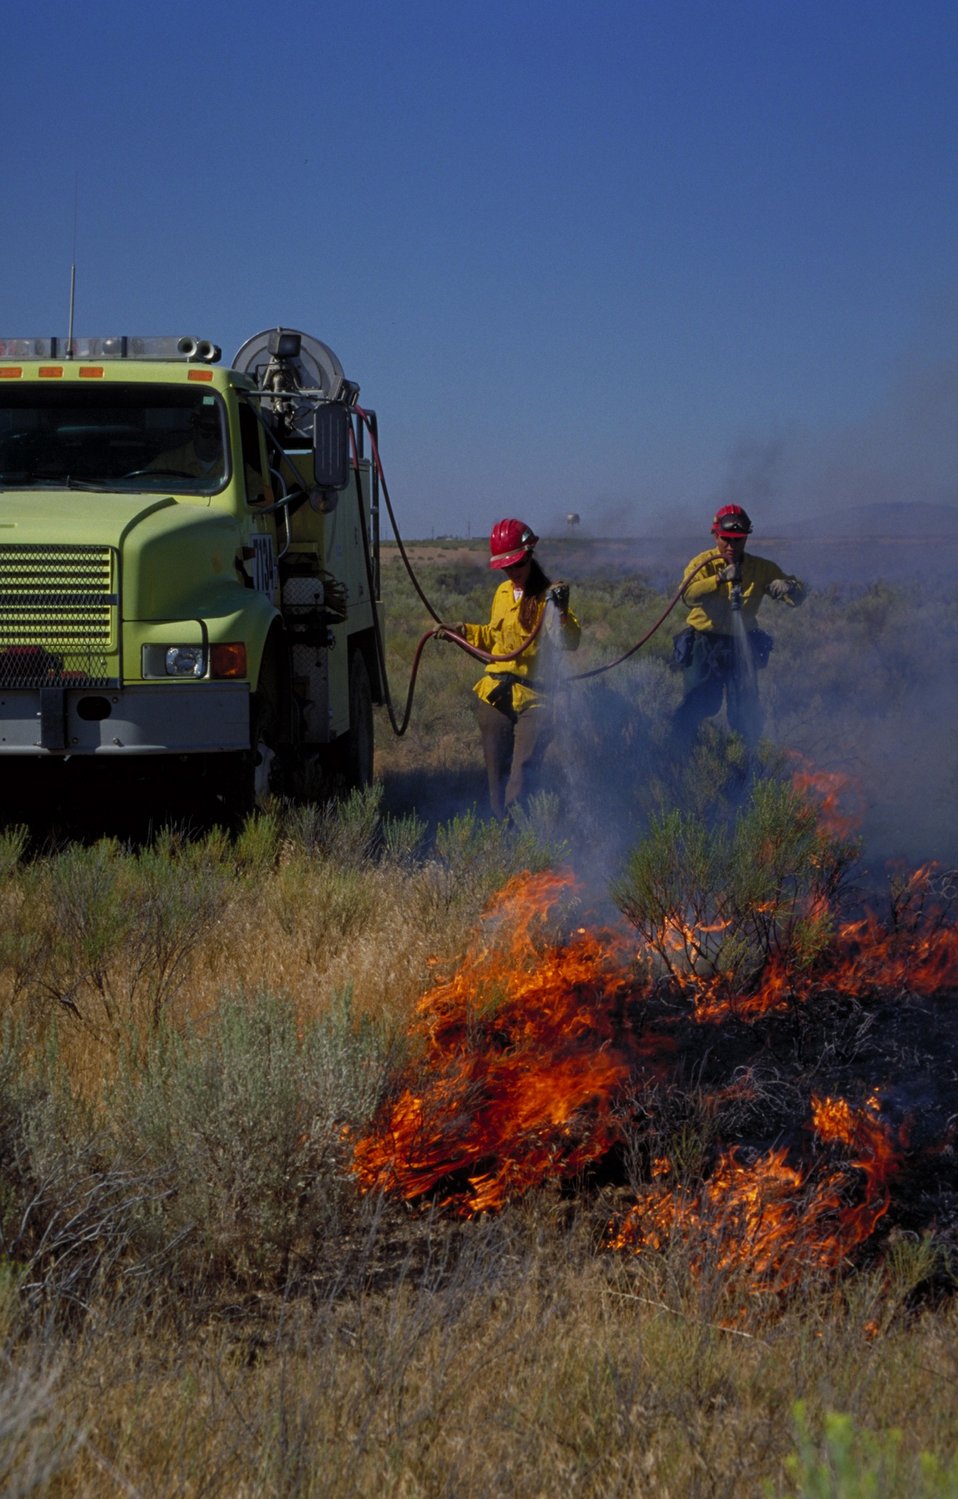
Prescribed burn Fire Season 2000 Lower Snake River District LSRD